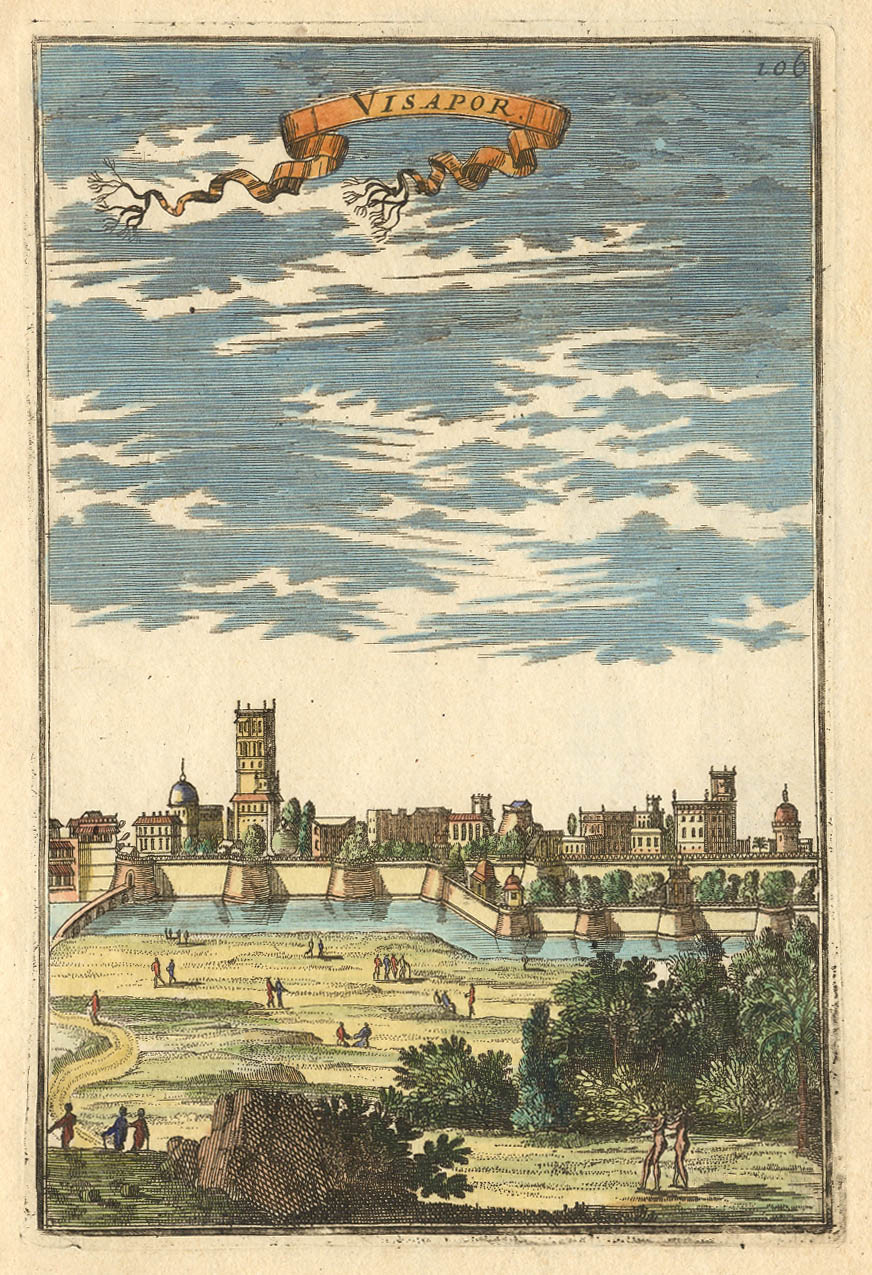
'Visapor,' from *MALLET*, 1719;